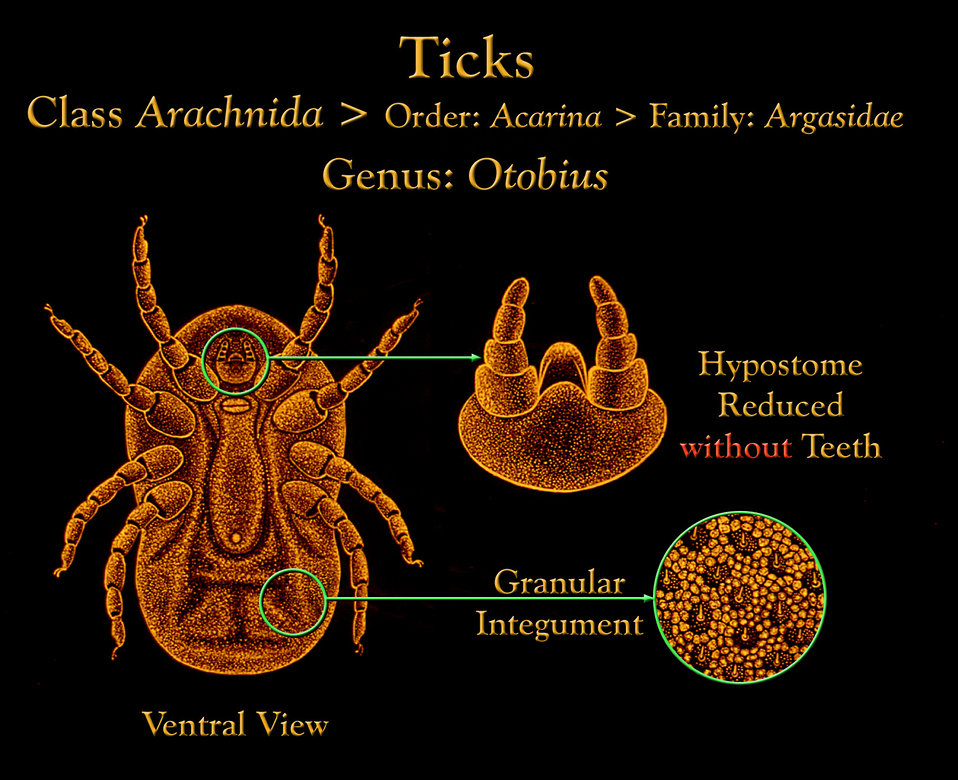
This illustration shows an Otobius soft tick from the ventral view with its reduced hypostome and granular integument.